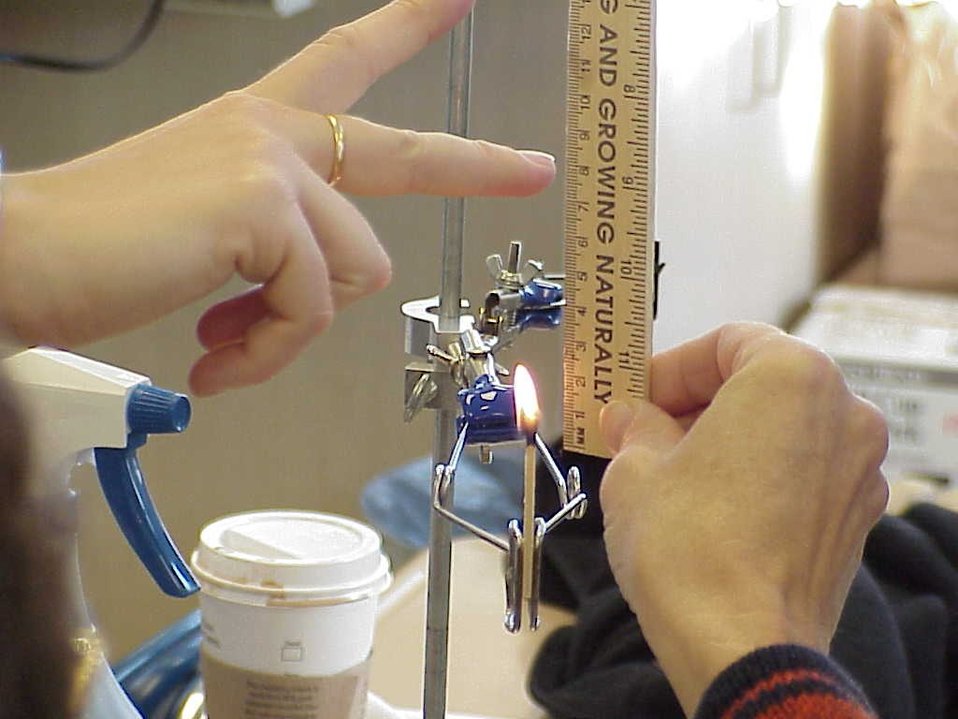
Environmental Education Fire Workshop Timberline High School Fall 2000